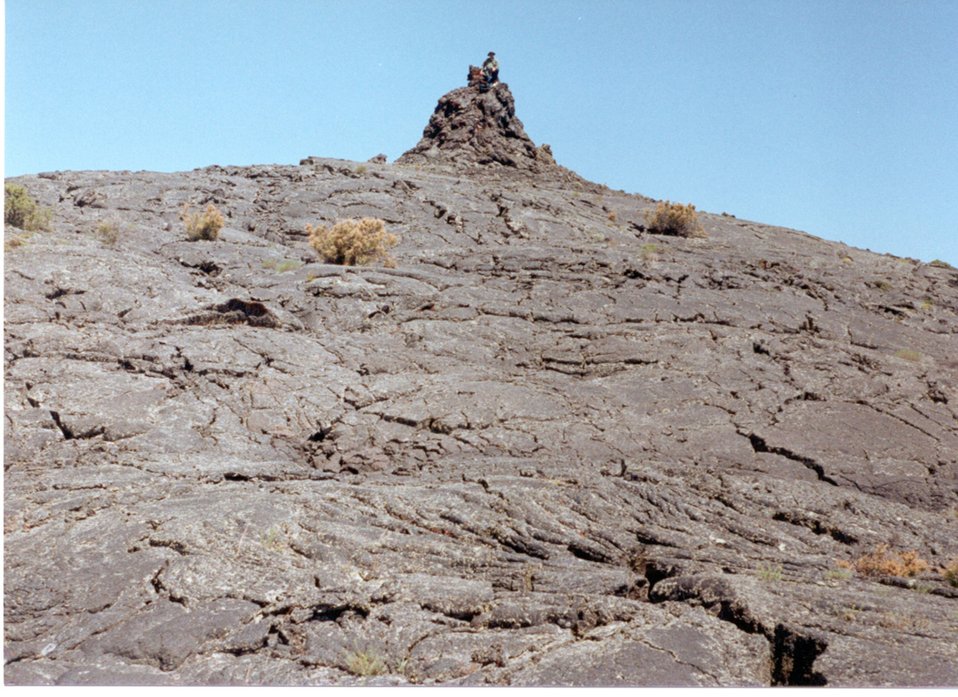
Spatter Cone Wapi Flow Craters of the Moon Shoshone Field Office USRD Upper Snake River District